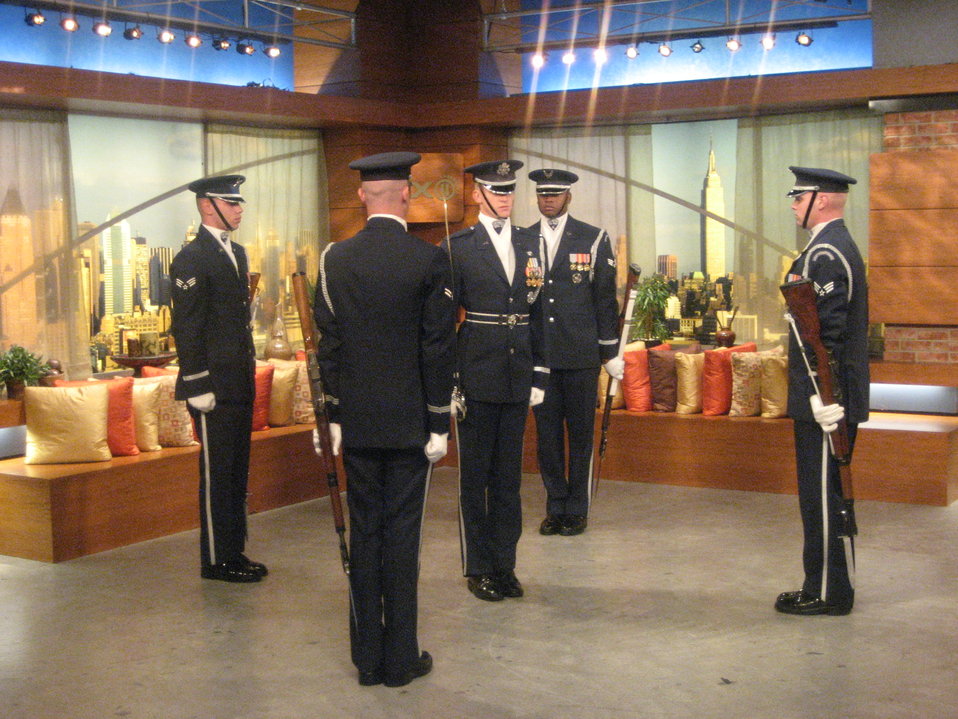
Members of the U.S. Air Force Drill Team perform on New York City television

Members of the U.S. Air Force Drill Team appeared on WPIX CW Channel 11 morning news Aug. 24 in association with Air Force Week New York City. There are more than 32,000 native sons and daughters of New York serving in the Air Force with 1,500 of them serving around the world today in contingency operations. Air Force Week New York City is Aug. 24-29 with various displays, flyovers, band concerts and more throughout the city’s five boroughs. Air Force Week brings Airmen to New York neighborhoods to honor hometown heroes, tell their stories, and to thank New Yorkers for their support of Airmen around the world.